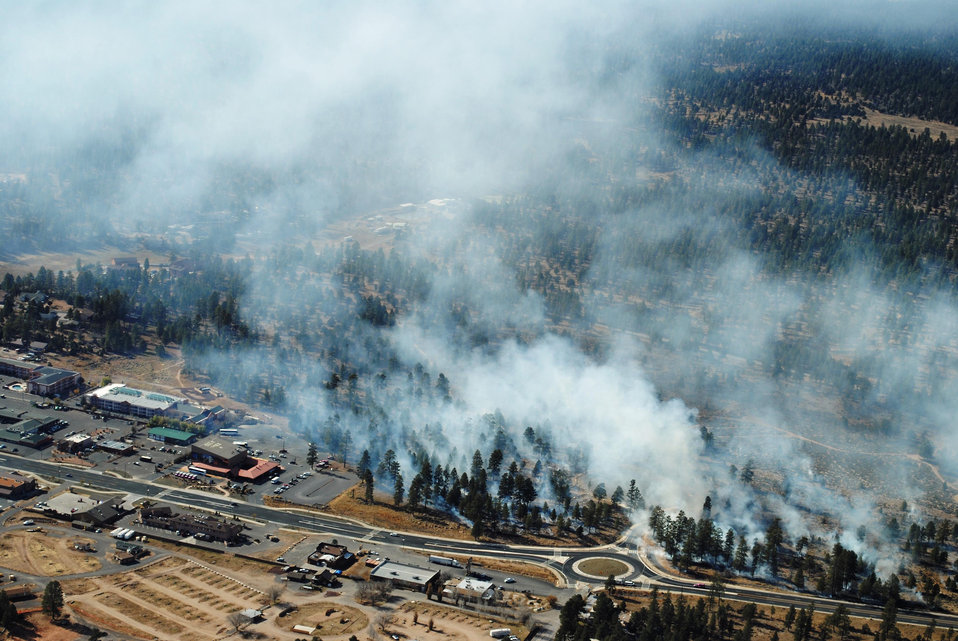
Fire strategy

The U.S. Forest Service has burned more than 480 acres in the Flying J Project, an effort on the Kaibab National Forest in Arizona to protect the community of Tusayan. The project is outside the Grand Canyon National Park and represents a small part of a larger effort to use controlled burns on more than 4,500 acres of the forest. So far, nearly 1,900 acres have been treated.